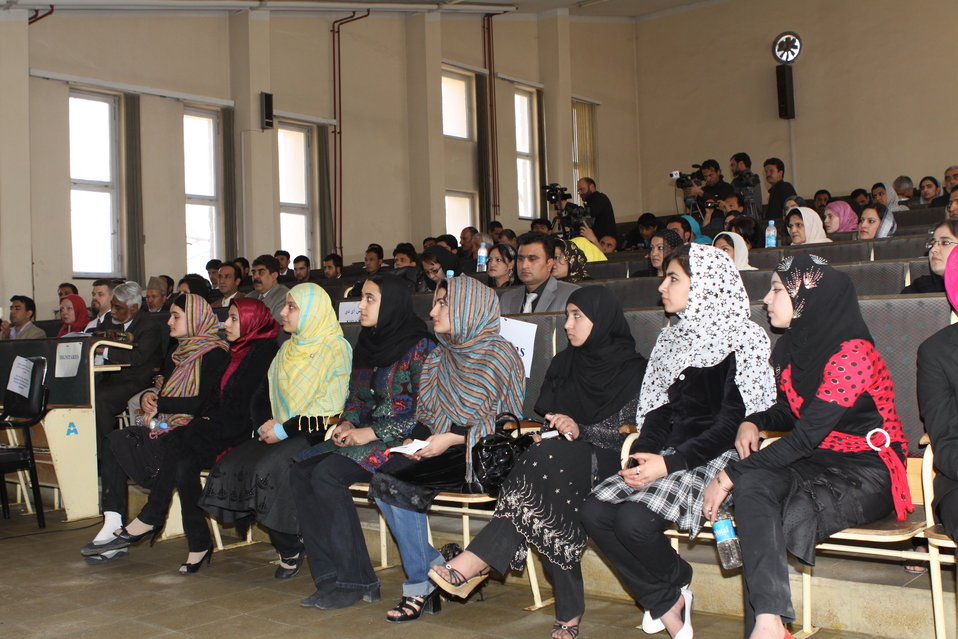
Female University Students Complete Internship

Kabul, Afghanistan | March 16, 2011 – In response to a demand for qualified Afghan engineers, Kabul University celebrated completion of an intensive five-month Mentor Protégé Training Program today by 10 female fourth year university students. The Training Program is a joint effort between the Government of the Islamic Republic of Afghanistan, the U.S. Agency for International Development (USAID), and the Universities of Kabul, Kandahar, Alberoony in Kapisa, Shiekh Zayed in Khost. The graduation ceremony highlighted collaboration with these national institutions in building the technical skills of young Afghans, made possible by USAID.

Four of the interns are engineers, while the remaining six are from the faculties of computer science, economics, and psychology.

Speaking about the event, H.E. Minister of Public Works Abdul Qudus Hamidi said, “The future of Afghanistan lies in developing the skills of our youth, and the engineering skills of these graduates today represent a small but important step forward for the country.”

Keynote speakers at the ceremony included H.E. Deputy Minister of Higher Education Abdul Rahim; USAID Senior Deputy Mission Director Robert Hellyer; and Chancellor of Kabul University Professor Hamidullah Amin. Approximately 150 people, including current and former students attended the graduation.

Launched last year, the Mentor Protégé Training Program has provided qualifying students the opportunity to intern with USAID’s Strategic Provincial Roads-South and East Afghanistan project and gain practical experience in a real work environment. The goal of the program was to offer interns the opportunity to gain hands-on experience to reinforce their formal studies. A total of 30 students from four national universities have benefitted from this program.

“The promotion of women’s rights is integrated into the overall U.S. Government development strategy and can be found in key programs, including education, healthcare, security, rule of law, political participation, agriculture, and economic development,” said Robert Hellyer. “The U.S. Government is committed to the Afghan leadership of programs that directly enhance development, particularly as it relates to women’s issues.”

This event also highlighted the learning achievements of students and emphasized the importance of hands-on internship programs. The curriculum is designed to instill students with the knowledge and confidence to qualify for engineering positions upon completion of their fourth year at their respective universities.